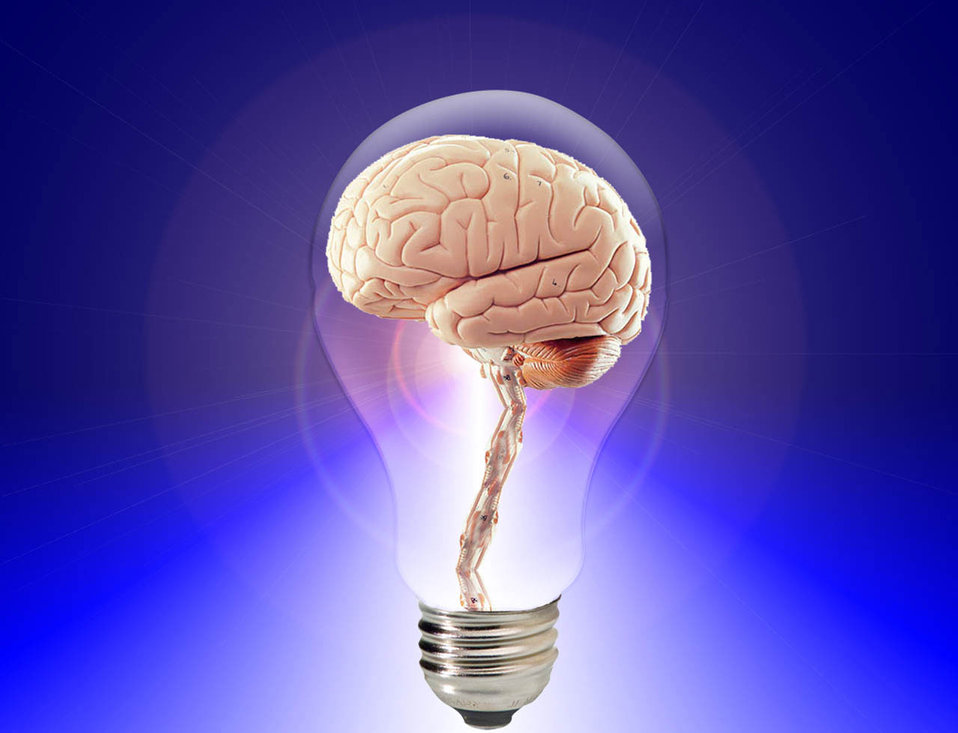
Bright idea

Brain inside the bulb.